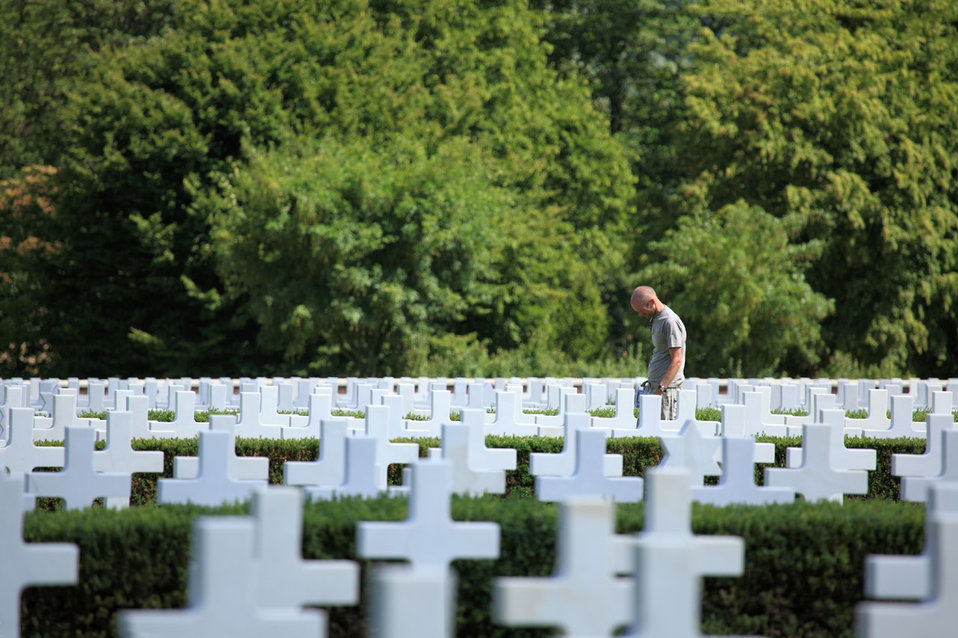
Grief at cemetery

Man walking at us army cemetery.